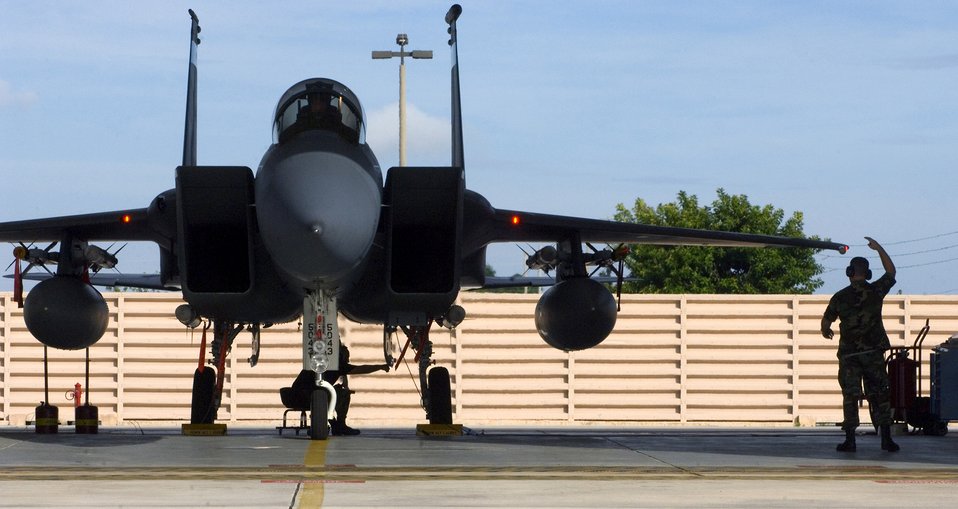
Guard unit helps protect nation

An F-15A Eagle prepares to launch from an alert facility at Homestead Air Reserve Base, Fla., Oct. 3 during a training exercise for Operation Noble Eagle. The 125th Fighter Wing, Det. 1, Eagles are on a 24 hour stand-by, fully loaded with live munitions and can be airborne in minutes. The detachment provides the Continental NORAD Region commander rapid response to invasions of the sovereign airspace of the U.S. and responds with appropriate defense measures against all hostile actions.